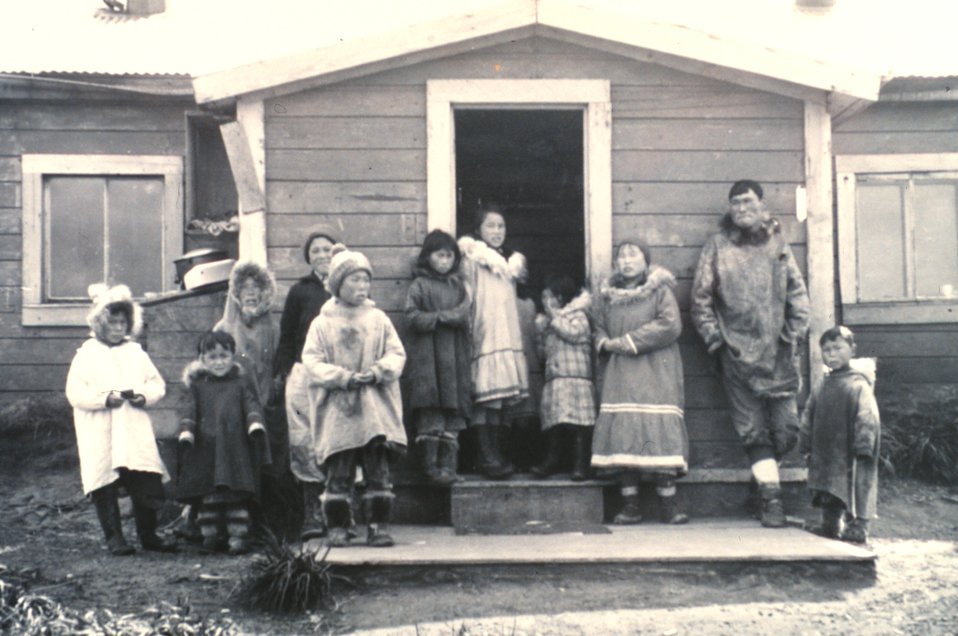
Eskimos visiting at Paul Evanoff's house.